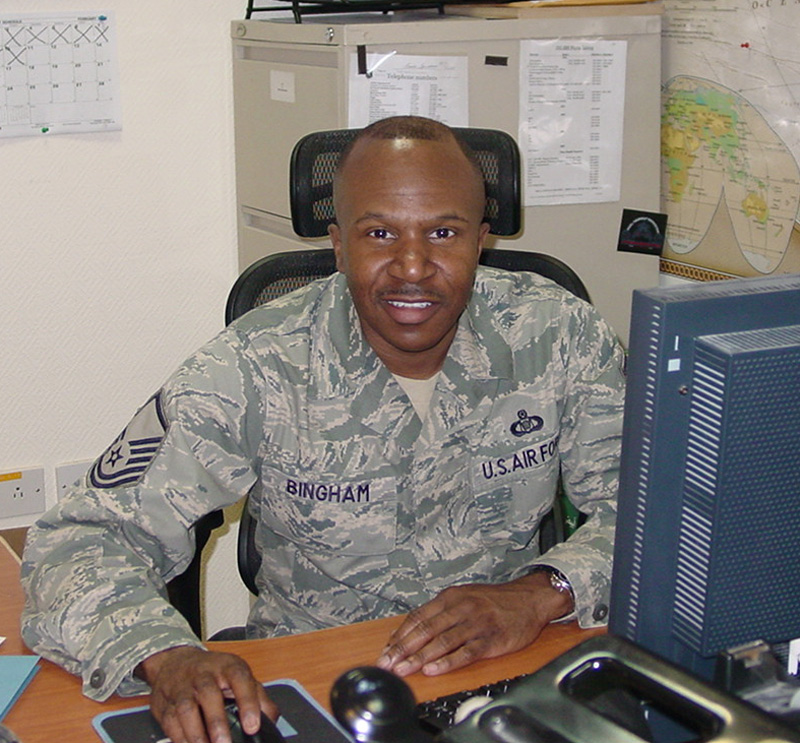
12 Outstanding Airmen of the Year named

Master Sgt. Tyrone Bingham, a host aviation resource management superintendent with the 170th Operational Support Squadron at Offutt AFB, Neb., leads an office that controls 25 times more aviator flight records than the average Air Force wing. The Air Force Chief of Staff reviews the selections. The selections for the 2009 12 Outstanding Airmen of the Year were announced July 2 by Air Force officials at Randolph Air Force Base, Texas.